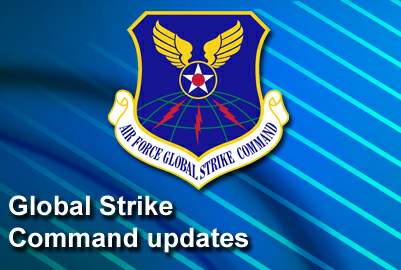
Global Strike Command leader updates progress

Air Force Global Strike Command's top officer provided an update on the command's progress toward full operational capability during a speech at the Capitol Hill Club Oct. 2, 2009, in Washington, D.C.